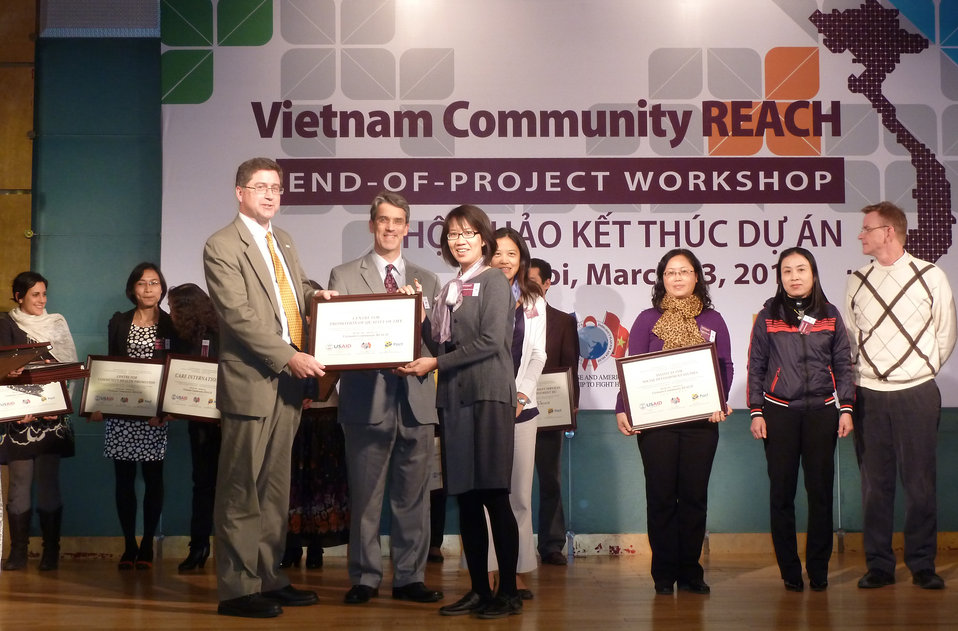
USAID, PEPFAR, and Pact award certificates to local and international partners for their work in addressing HIV in Vietnam

Community REACH project close-out with USAID and implementing partner, Pact